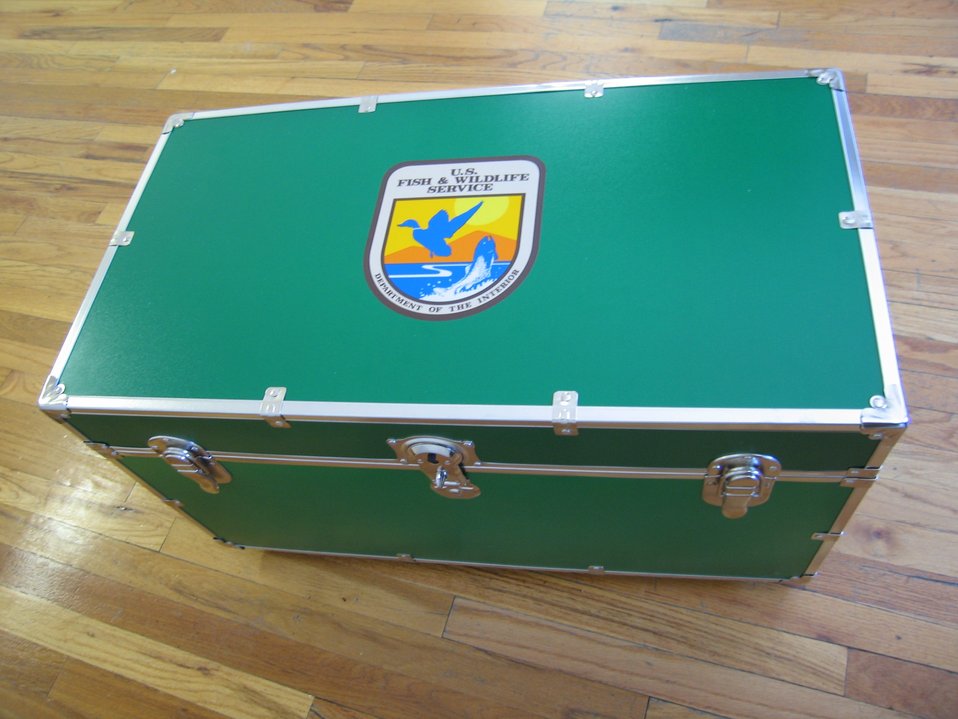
EE Trunk